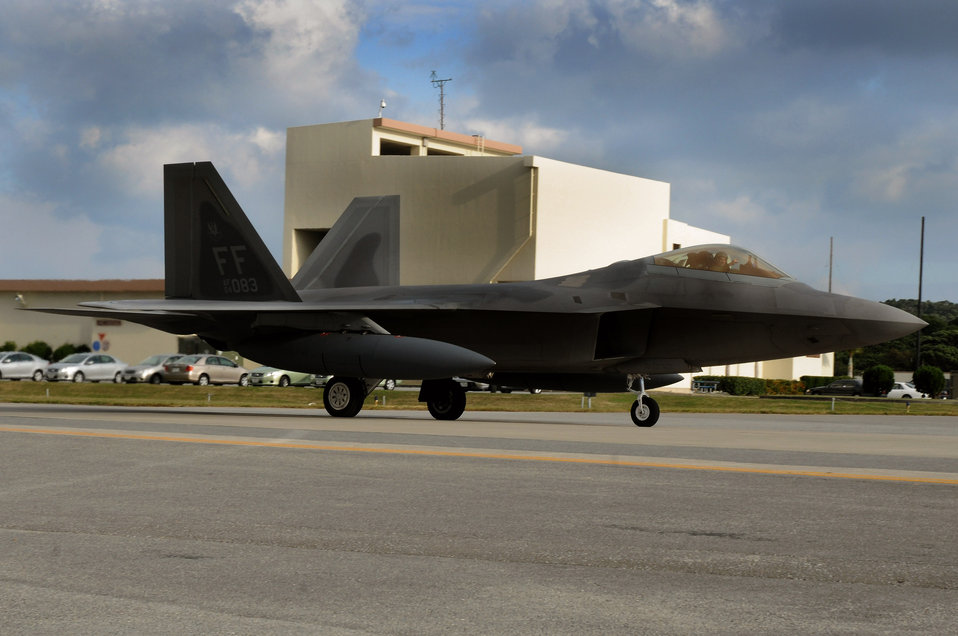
Raptors return to the Pacific

After landing at Kadena Air Base, Japan, an F-22 Raptor taxis down the runway Jan. 11. The aircraft is one of 12 deployed from Langley Air Force Base, Va., as part of an air expeditionary force rotation.